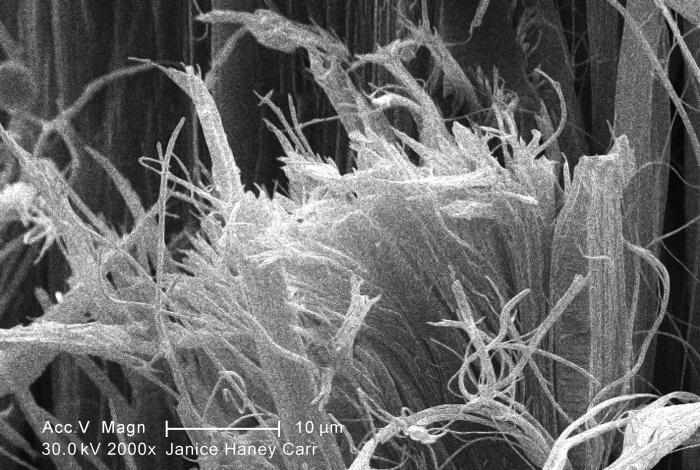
Under a high magnification of 2000X, this scanning electron micrograph (SEM) revealed some of the microcrystalline ultrastructure exhibited by a piece of raw chrysotile, or white asbestos, which had been excavated from the Lowell Asbestos Mine on Belvidere Mountain, Vermont.